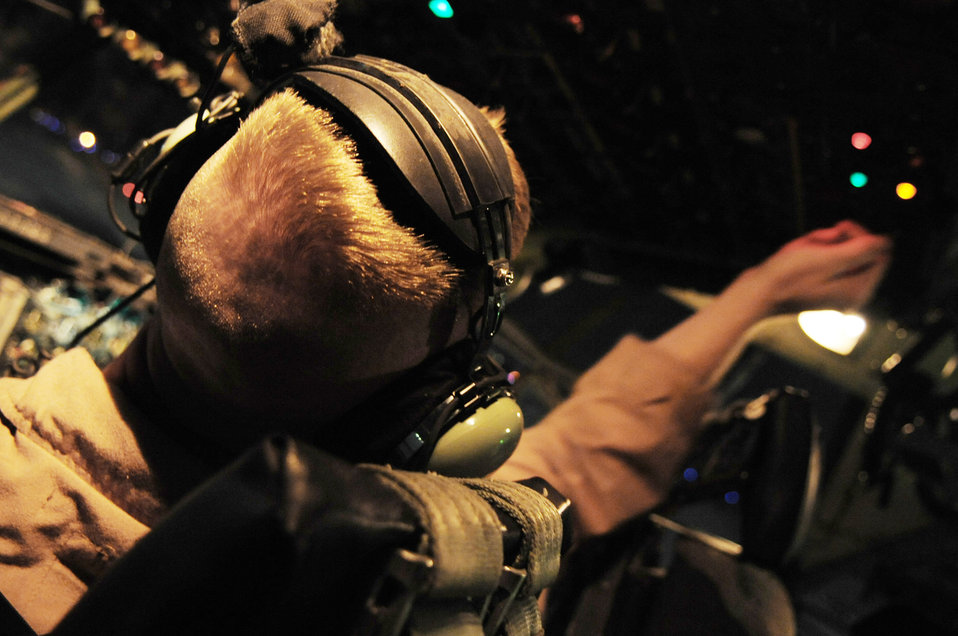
C130E completes last combat mission

Tech Sgt. John Bohman does a pre-flight check of a C-130E Hercules before its last combat mission March 6, 2010, at Joint Base Balad, Iraq. Sergeant Bohman is a flight engineer assigned to the 777th Expeditionary Aircraft Maintenance Unit.